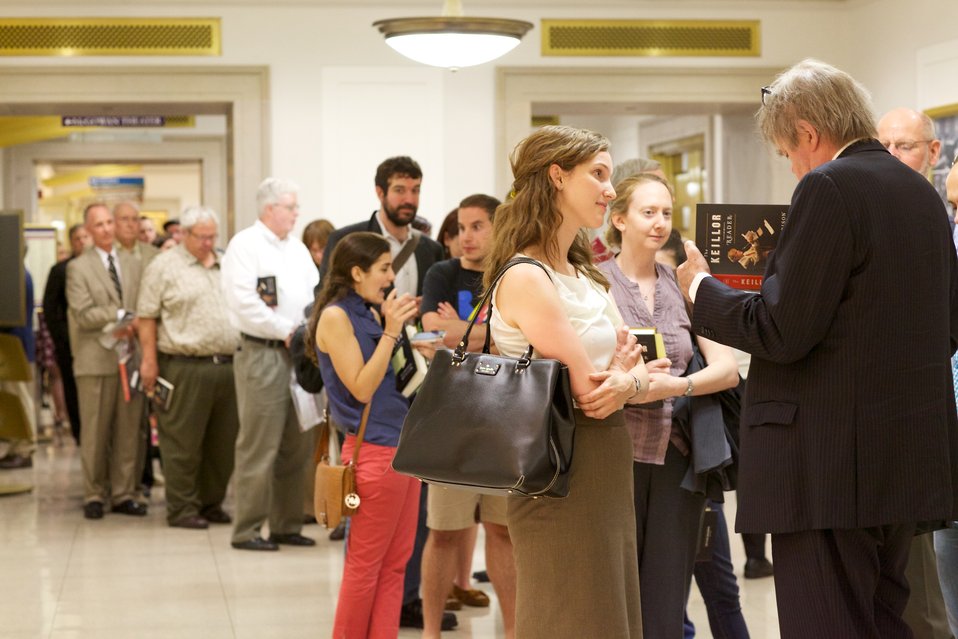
The Keillor Reader